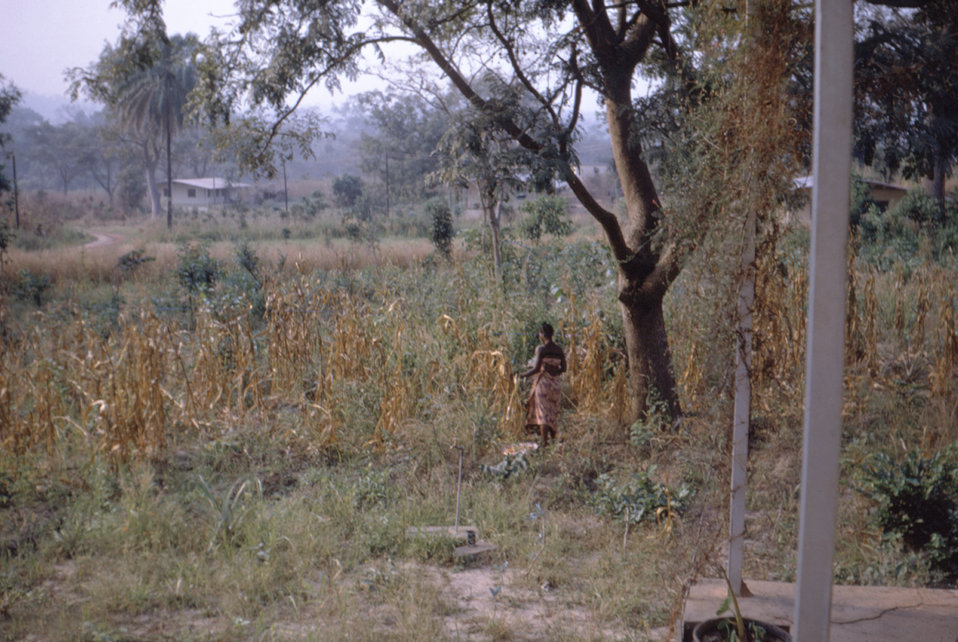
This 1969 photograph taken during a CDC smallpox investigation in this location, depicted a Dekina, Nigerian woman while she was standing in a field of guinea corn.